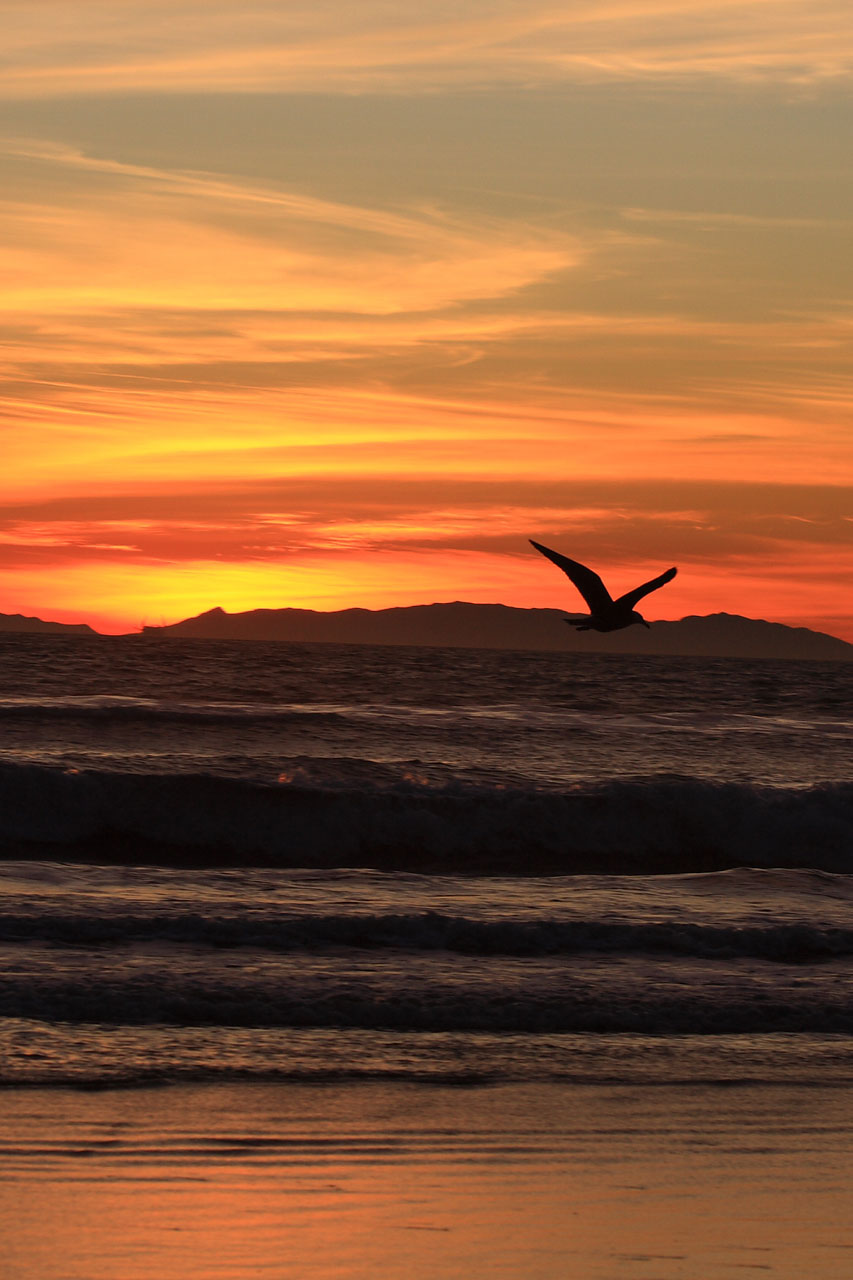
California sunset on new year's eve

Sunset at huntington beach pier, huntington beach, ca, on 31 december 2009.